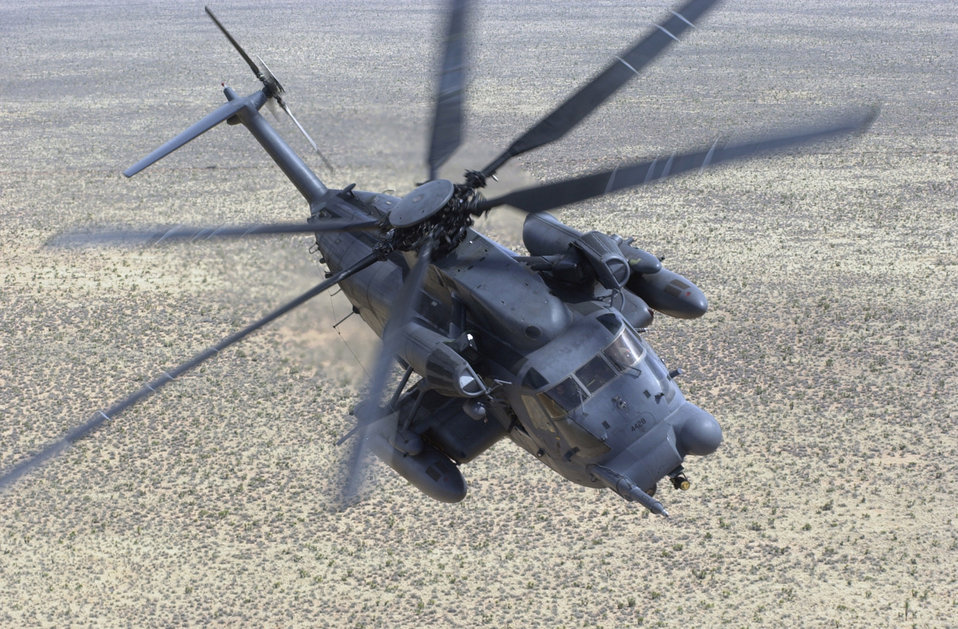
Training mission

KIRTLAND AIR FORCE BASE, N.M. -- A 58th Special Operations Wing, 551st Special Operations Squadron, MH-53J Pave Low IIIE flies a training mission here. The MH-53J's mission is to perform low-level, long-range, undetected penetration into denied areas, day or night, in adverse weather, for infiltration, exfiltration and resupply of special operations forces. The MH-53J Pave Low III heavy-lift helicopter is the largest and most powerful helicopter in the Air Force inventory, and the most technologically advanced helicopter in the world. Its terrain-following, terrain-avoidance radar and forward-looking infrared sensor, along with a projected map display, enable the crew to follow terrain contours and avoid obstacles, making low-level penetration possible.